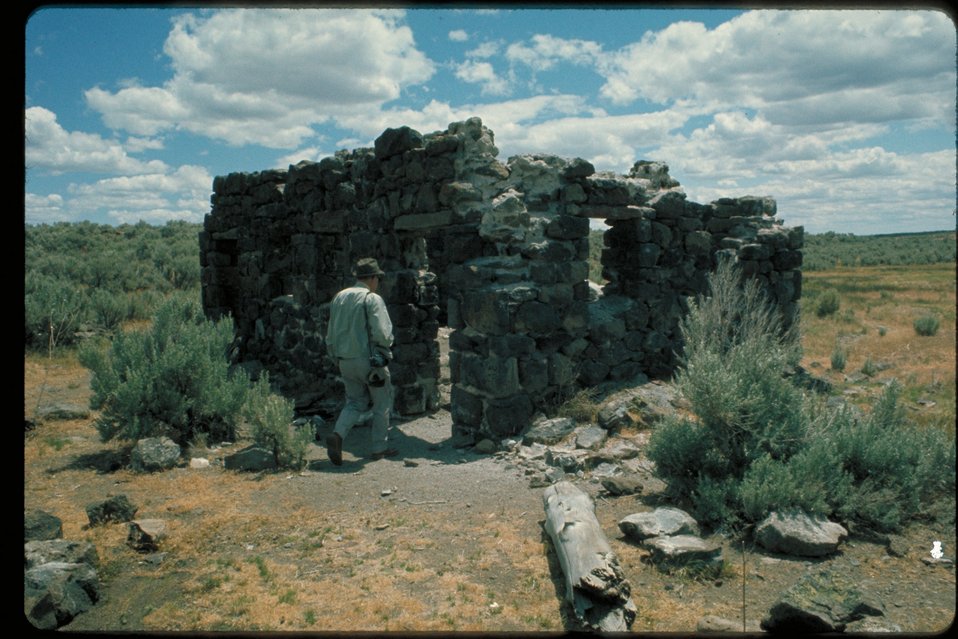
Hot Springs east of Mountain Home Oregon Trail Lower Snake River District